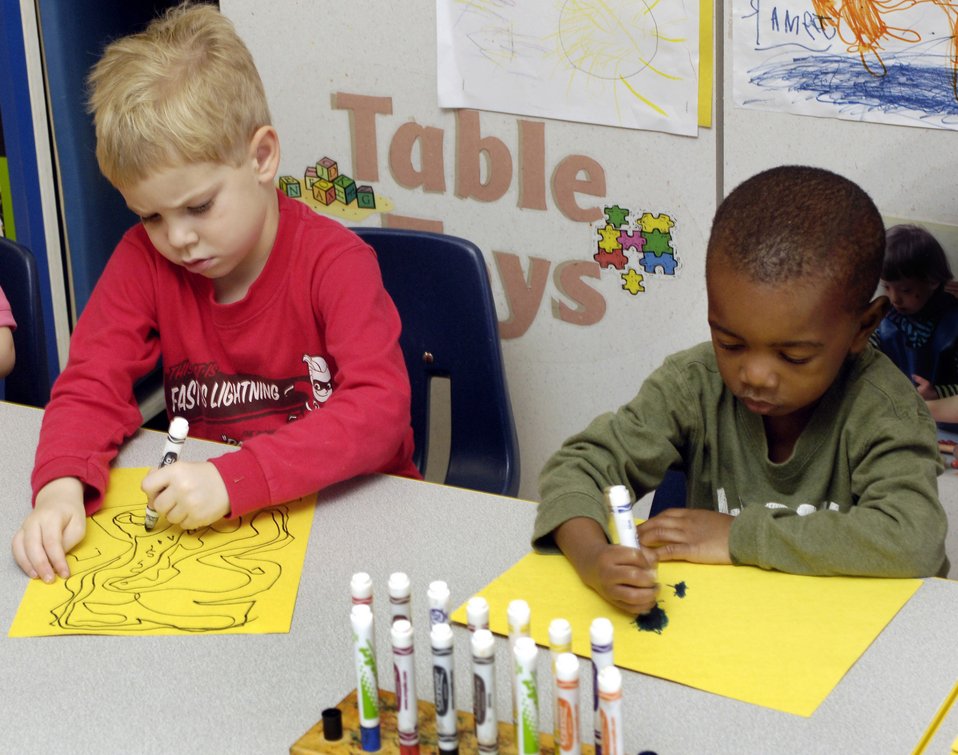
Art expression

KEESLER AIR FORCE BASE, Miss. (AFPN) -- Brantly Shows, 4, and Damian Dixon, 3, draw pictures of devastation from Hurricane Katrina at the child development center Feb. 21. The children's drawings are displayed throughout the center as a means for them to express their feelings about the hurricane. Brantly's father is Staff Sgt. Alexander Shows of the 85th Engineer Squadron and Damian's mother is Tech. Sgt. Carmaneta Dixon of the mission support squadron.